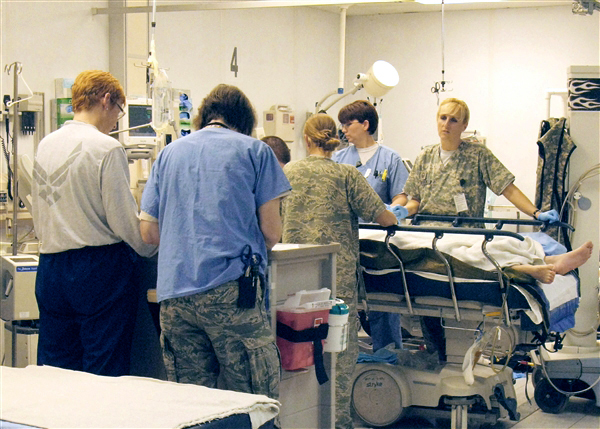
Bagram hospital provides care to all who need it

The operating rooms at Staff Sgt. Heathe N. Craig Joint Theater Hospital at Bagram Airfield, Afghanistan, keep busy with the steady stream of arriving patients. Most of the patients are U.S., coalition and Afghan security forces troops, but some are Afghan civilians and even enemy forces.